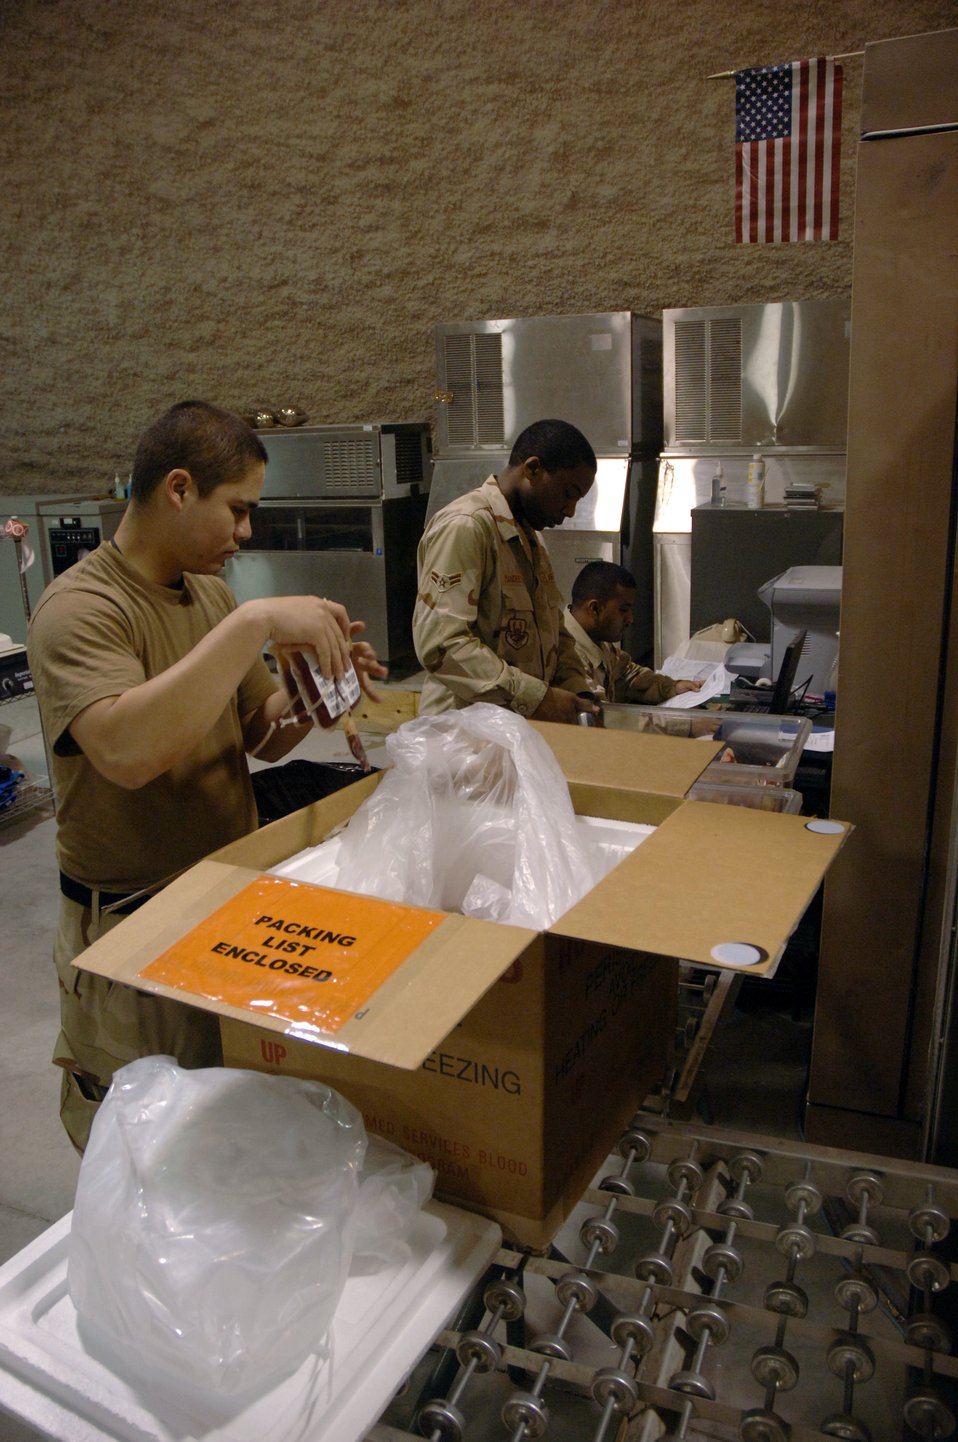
Blood samples

SOUTHWEST ASIA (AFPN) -- Senior Airman Jesus Herrera (left), Airman 1st Class Roaquiem Manderson (center) and Staff Sgt. Ronell Ramcharitar unload blood samples for inventory at the blood transshipment center here Jan. 28. The center gets blood from the United States and sends it throughout the region. Airman Menderson and Sergeant Ramcharitar are deployed from Langley Air Force Base, Va. Airman Herrera is deployed from Travis AFB, Calif. The Airmen are with the 379th Expeditionary Medical Support Flight.